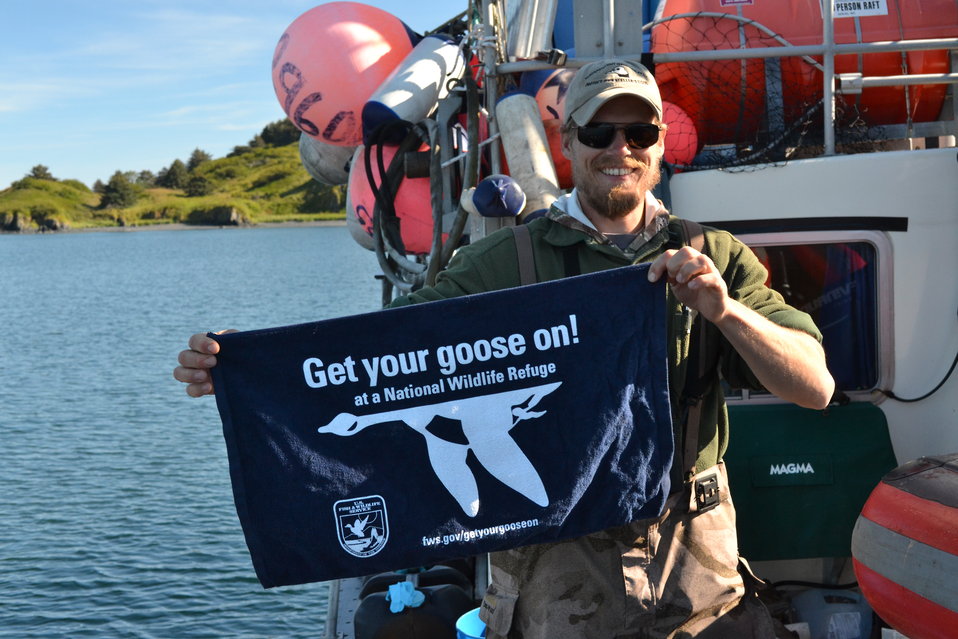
Get Your Goose On! - Alaska Style

USFWS volunteer Nicholas Docken on the Refuge Research Vessel Ursa Major II

Credit: Katharine Studholme / USFWS

The Kodiak National Wildlife Refuge is a United States National Wildlife Refuge in the Kodiak Archipelago in southwestern Alaska, United States.

The Kodiak National Wildlife Refuge includes the southwestern two-thirds of Kodiak Island, Uganik Island, the Red Peaks area of Afognak Island and all of Ban Island in the archipelago. It encompasses 1,990,418 acres (8,054.94 km2).[2] The refuge is administered from offices in Kodiak.

The refuge contains seven major rivers and about 100 streams. It is a spawning ground for all six species of Pacific Ocean salmon, trout and several other fish species, as well as a nesting ground for 250 species of bird, many of which feed on salmon. The refuge has only six native species of mammals: Kodiak brown bear, red fox, river otter, ermine, little brown bat and tundra vole. The non-native mammals Sitka deer, mountain goat, Roosevelt elk, snowshoe hare and beaver were introduced to the archipelago between the 1920s and 1950s and are now hunted and trapped.

The climate of the refuge is that of southern Alaska, mild and rainy. Many areas in the refuge are densely forested with Sitka Spruce at lower elevations. There are grasslands in drier areas and at higher elevations. The refuge contains several small glaciers.